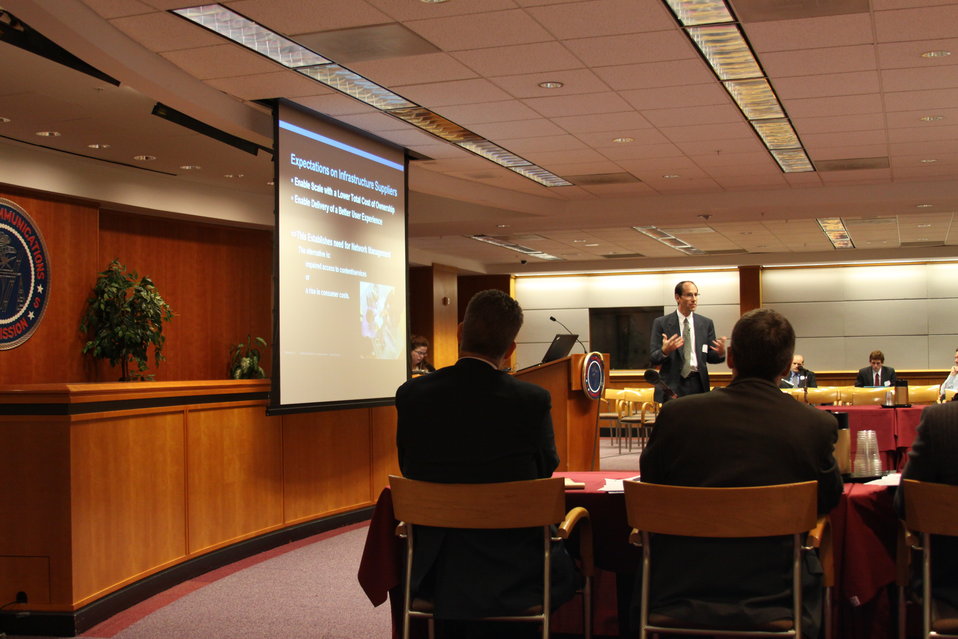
First Open Internet Workshop 12-8-09